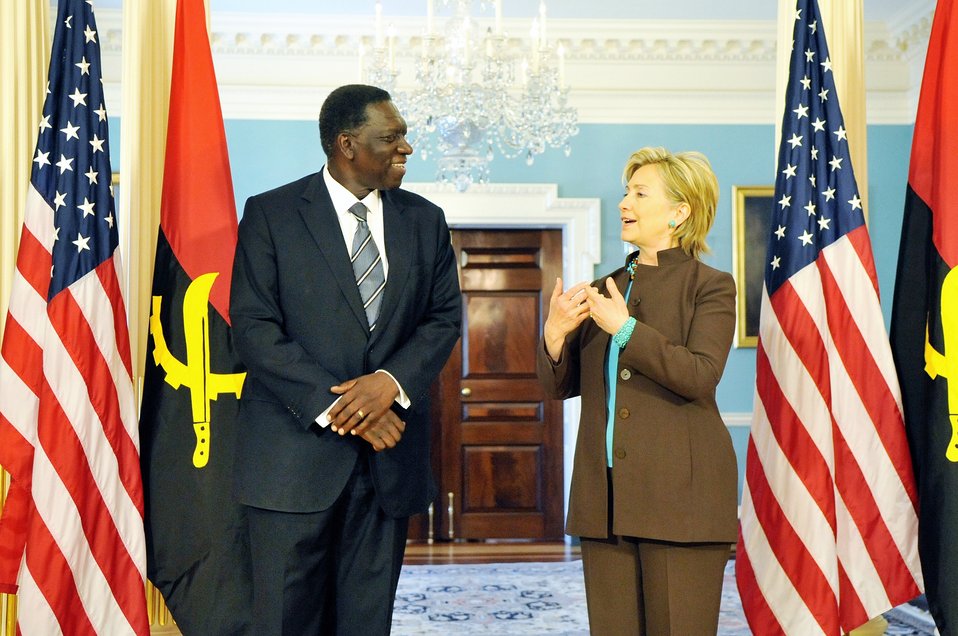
Secretary Clinton Meets With Angolan Minister of External Affairs

U.S. Secretary of State Hillary Rodham Clinton hosts a bilateral meeting with Angolan Minister of External Affairs Ansuncao Afonso dos Anjos in the Treaty Room of the U.S. Department of State in Washington, DC May 21, 2009.